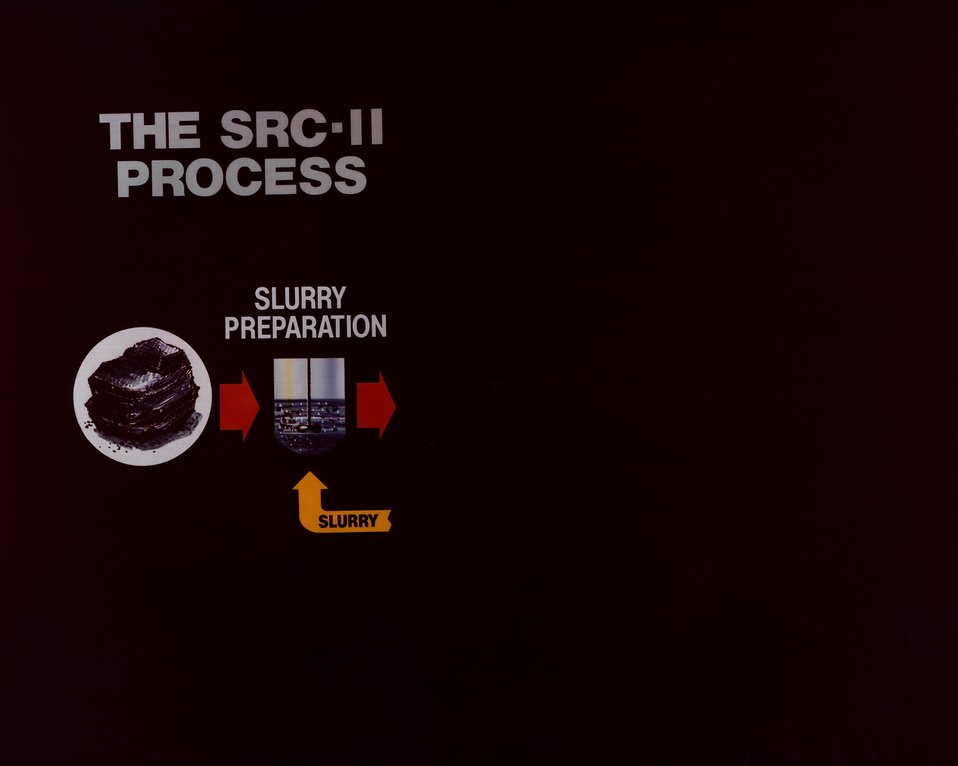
PART I OF A FLOW DIAGRAM ILLUSTRATING THE SRC-II PROCESS.